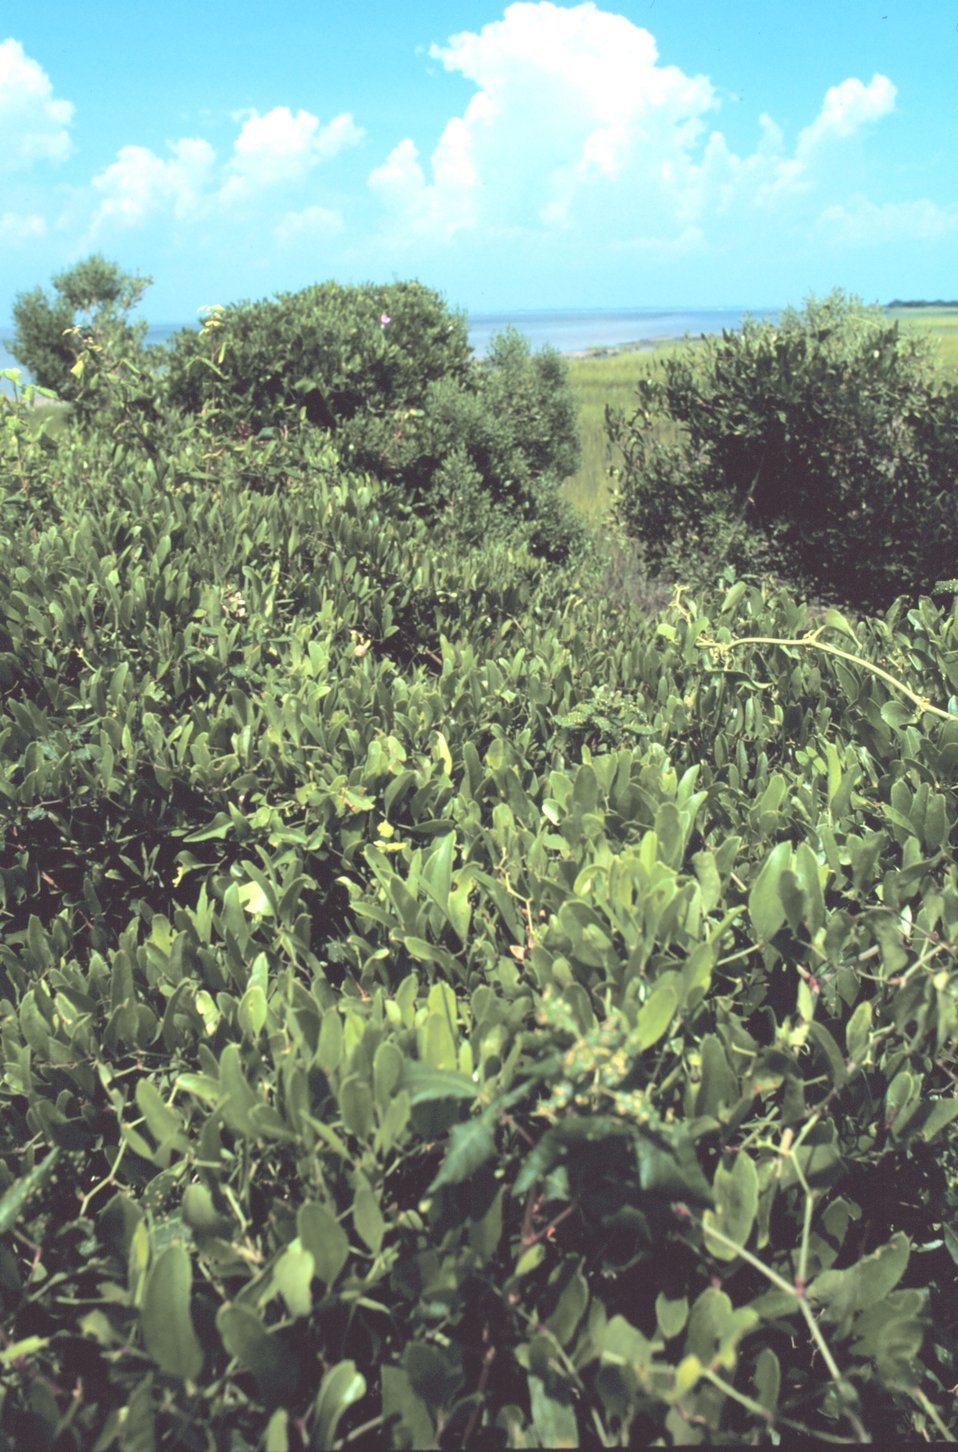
Tidal area along the Harbor River